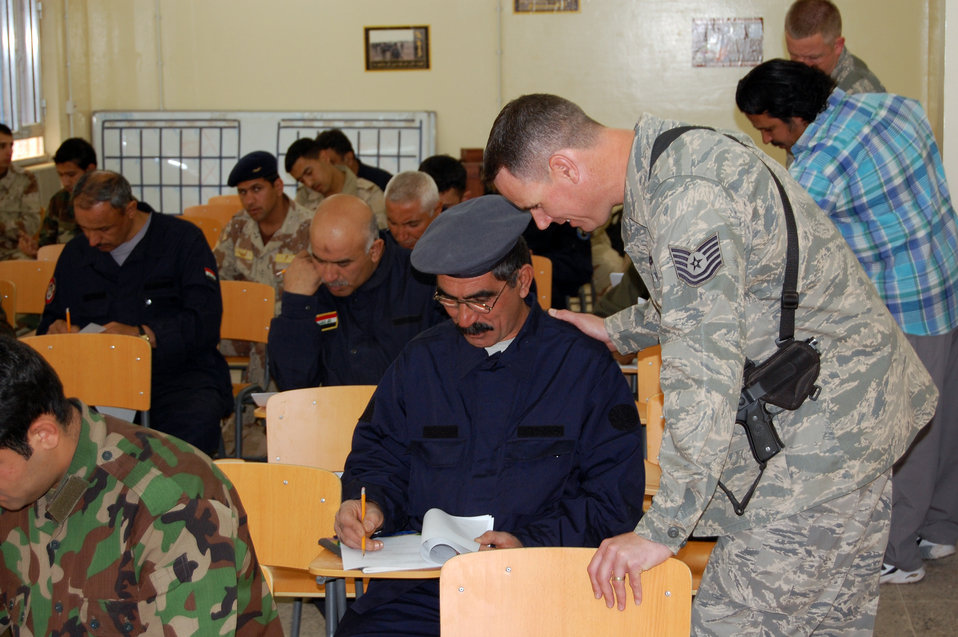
Air Force instructors empower Iraqi warrant officers to lead

Tech. Sgt. Mike Higby helps one of his Iraqi students with a question during their final test March 28 at Camp Taji, Iraq. Twenty-nine Iraqi warrant officers completed the seven-day course where they were taught lessons on discipline, leader influence, teamwork and development, ethics and values, Law of Armed Conflict and problem solving. Sergeant Higby is an 821st Expeditionary Training Squadron Iraqi warrant officer professional development course instructor. He is deployed from Kapaun Air Station, Germany, and is a native of Anchorage, Alaska.